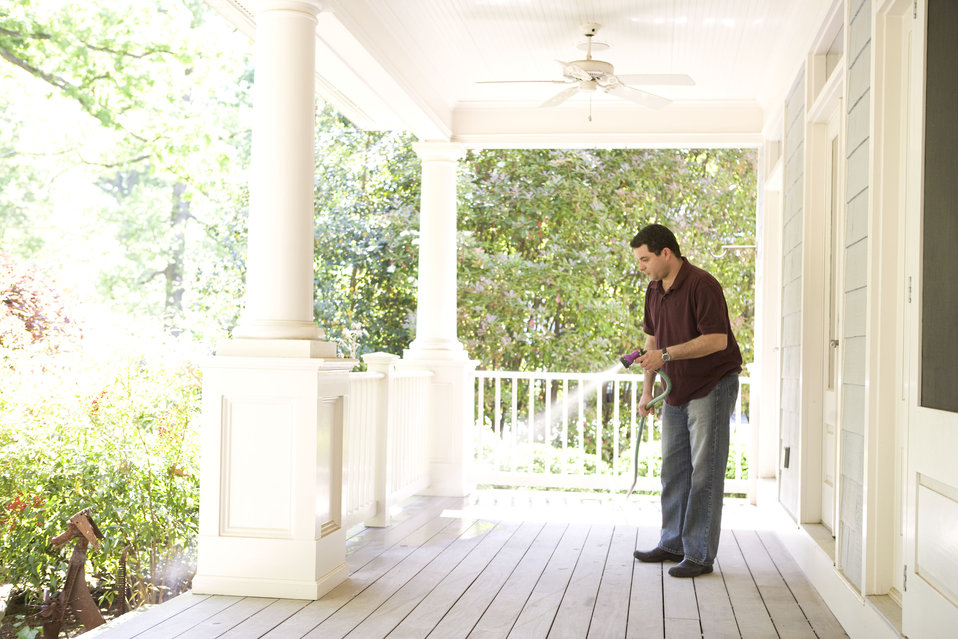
Home maintenance includes both the indoor, and as was the case here, outdoor environment, and is an ongoing process with which a homeowner need to keep up in order to provide for a healthy living space. Keeping your porch dust-free reduces the amount of contaminants tracked into the house.This man was in the process of cleaning his home's porch using a broom, as well as a water hose. In this way, airborne particulates including dust and pollen, could be removed from this area of his home, reducing the detrimental effects upon his family's respiratory systems. These irritants can sometimes result in sinus infections, and asthma.